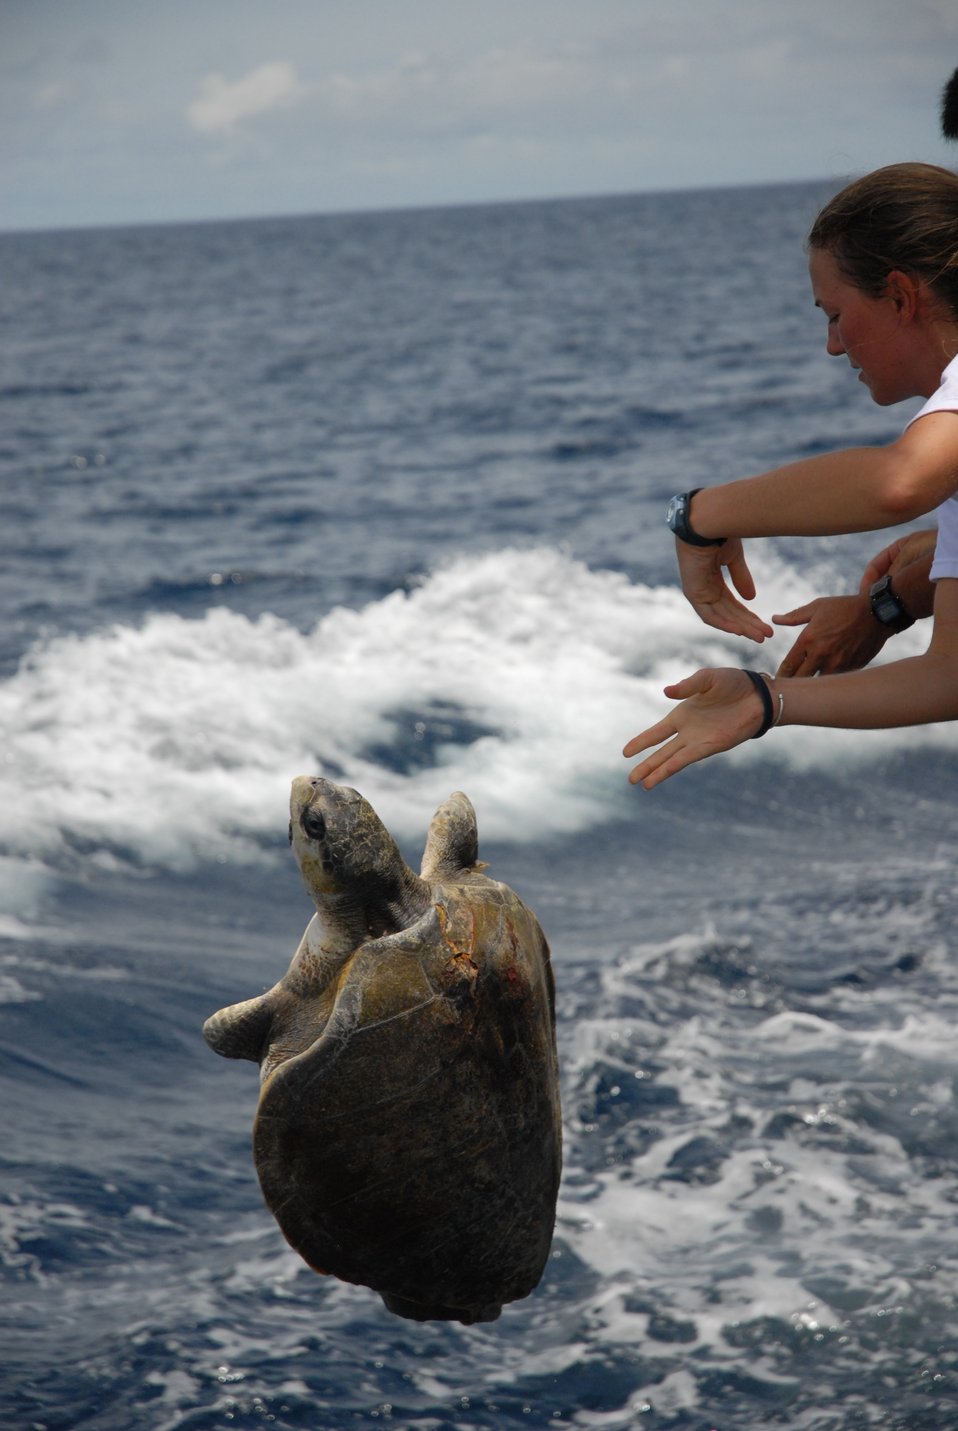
Returning sea turtle to the ocean after completing measurements.